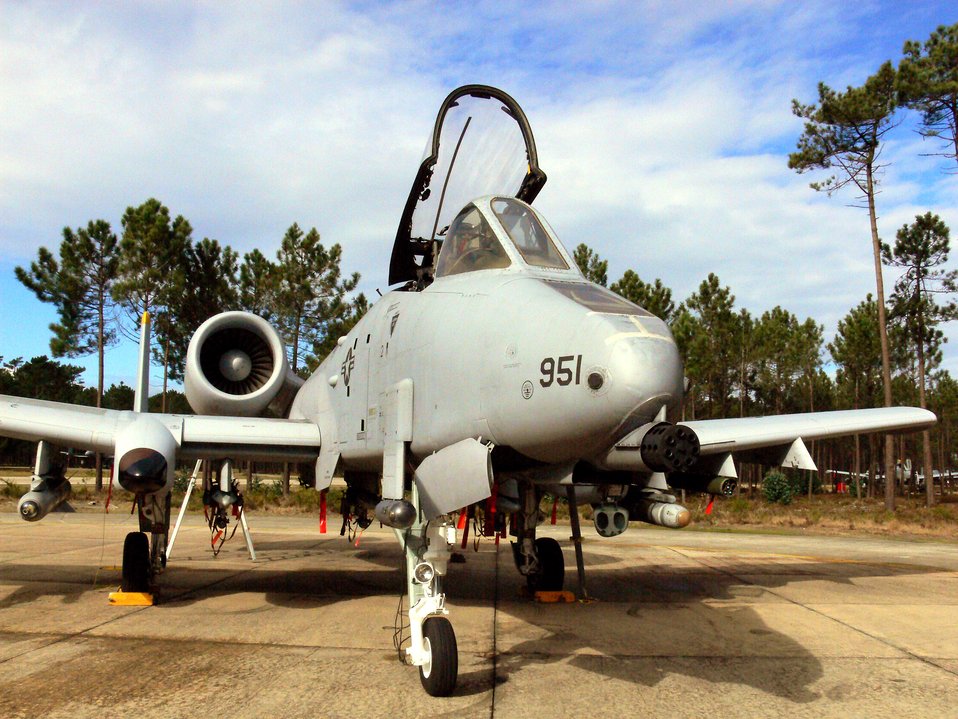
Spangdahlem Airmen, a force behind ground support

An A-10 Thunderbolt II assigned to the 81st Fighter Squadron at Spangdahlem Air Base, Germany, awaits its pilot during training Feb. 23 at Montreal Air Base in Portugal. Although the 81st FS Airmen returned in September from a four month deployment to Afghanistan, they continue their training, honing their skills.